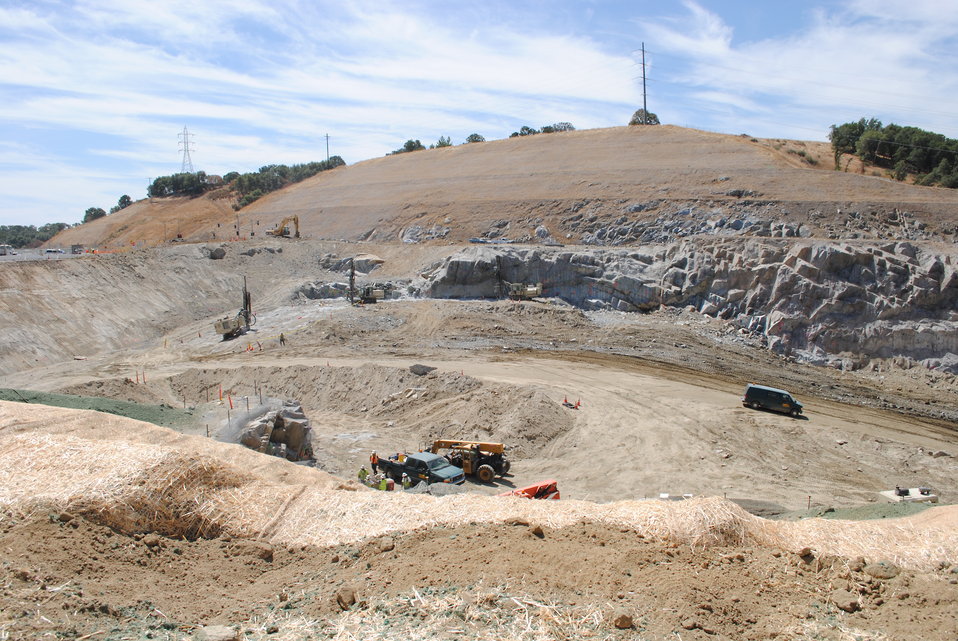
Folsom Dam Auxiliary Spillway Construction Aug. 12, 2011

The Joint Federal Project is a $926 million cooperative effort between the U.S. Army Corps of Engineers and the U.S. Department of Interior, Bureau of Reclamation. The project will construct an auxiliary spillway, shown Aug.12, 2011, to compliment the functions of the main Folsom Dam. It will allow water to be released earlier and more safely from Folsom Lake during a high water event.